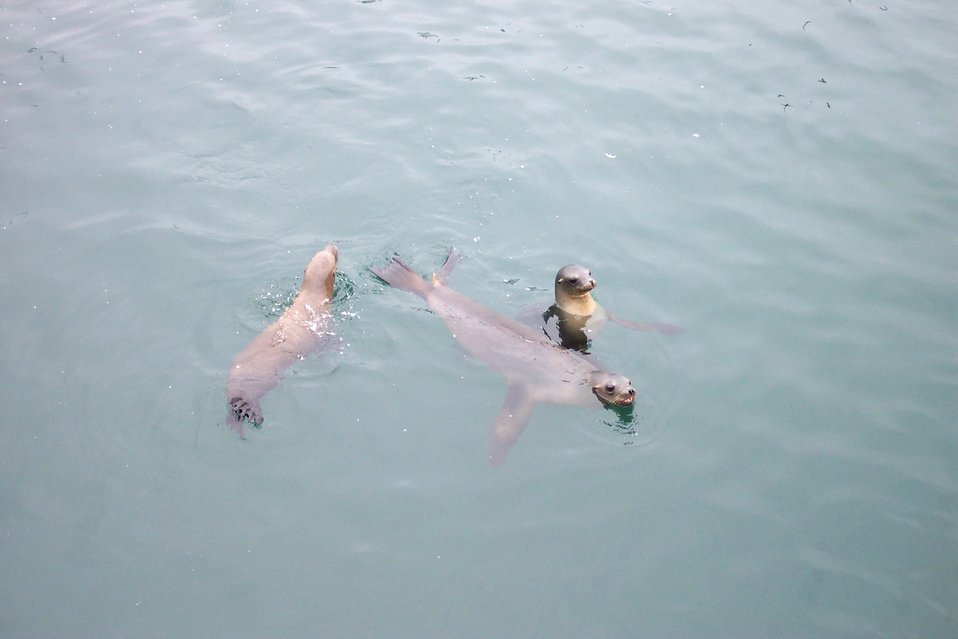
Sea lions swimming near Fisherman's Wharf, Monterey.